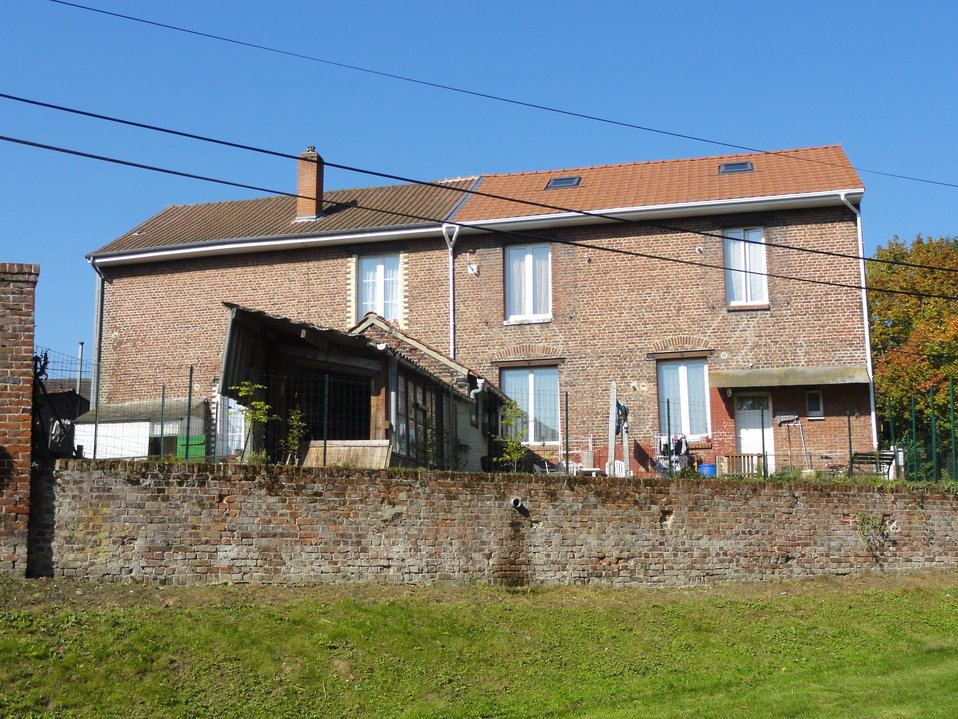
Fran√ßais†: Cit√©s de la Fosse n¬∞ 6 bis - 6 ter de la Compagnie des mines de Marles, Calonne-Ricouart, Pas-de-Calais, Nord-Pas-de-Calais, France.